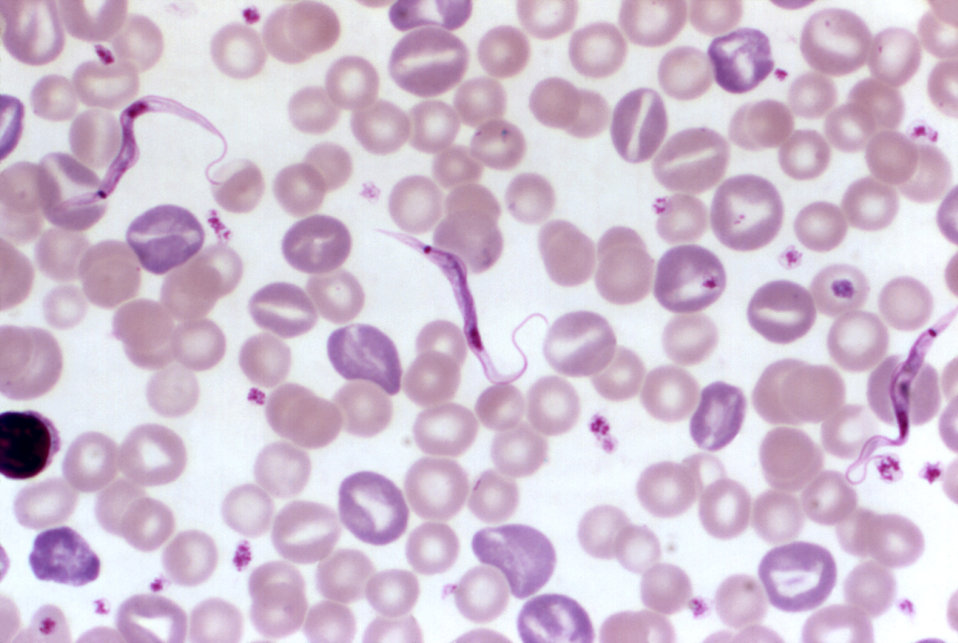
Magnified 1000X, this photomicrograph depicts three Trypanosoma lewisi flagellate parasites that were present in a thin blood film specimen, and which had been highlighted using a Giemsa stain.